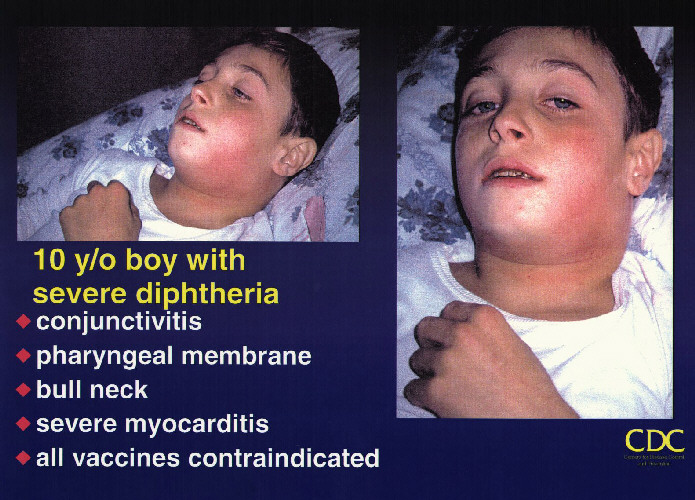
Diphtheria